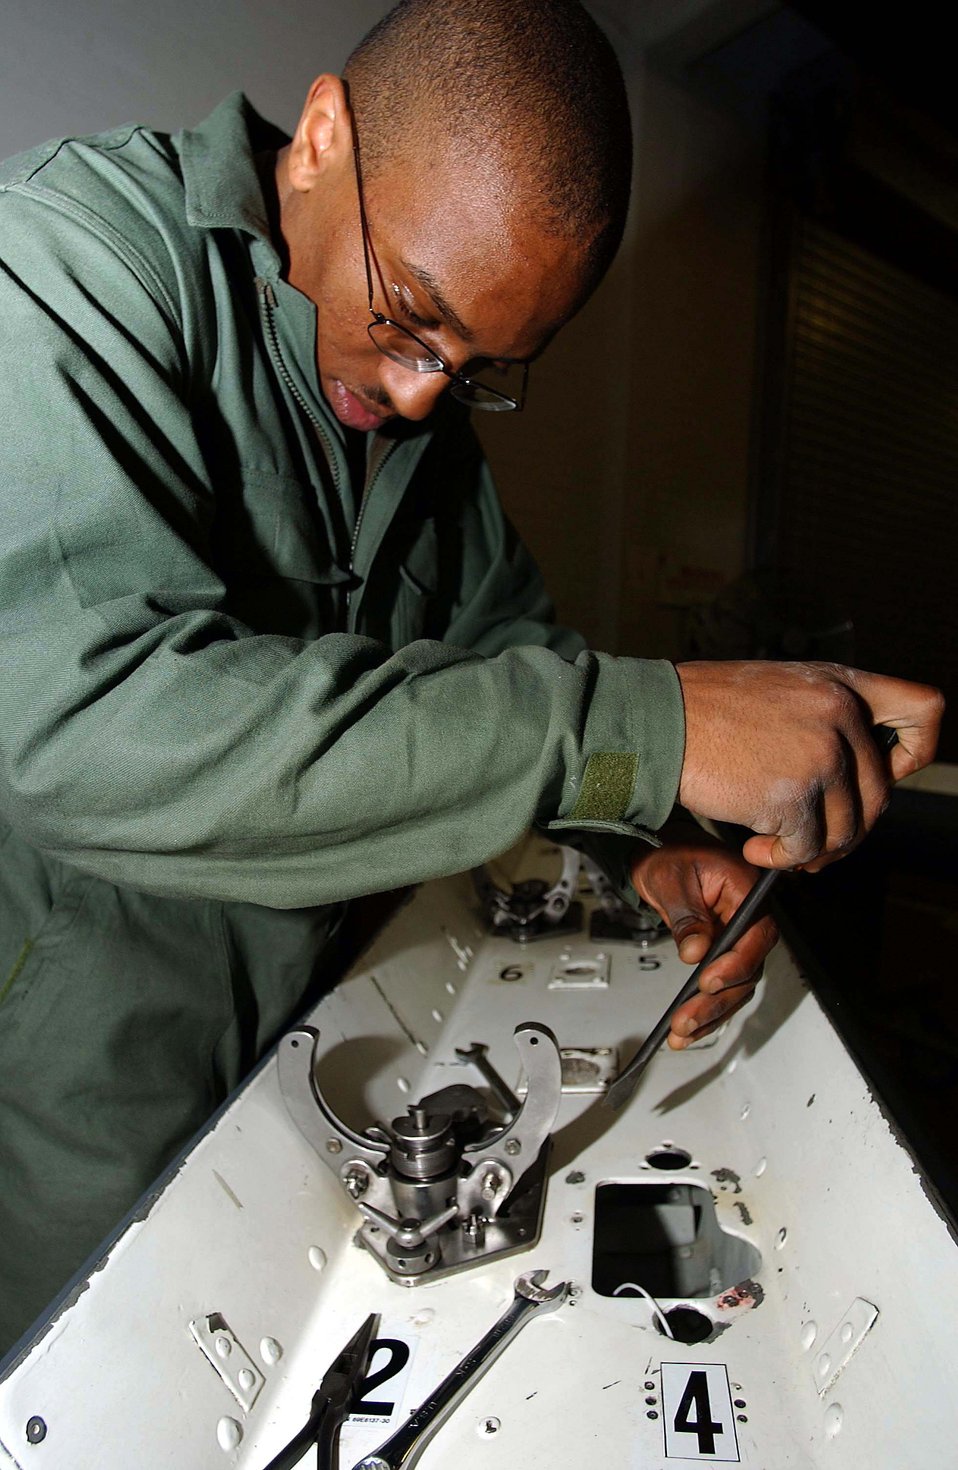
Arm removal

ROYAL AIR FORCE LAKENHEATH, England -- Airman 1st Class Michael Hundley removes the arm of a SUU-20 missile launcher housing here April 7. Airman Hundley is an armament systems journeyman with the 48th Munitions Squadron.